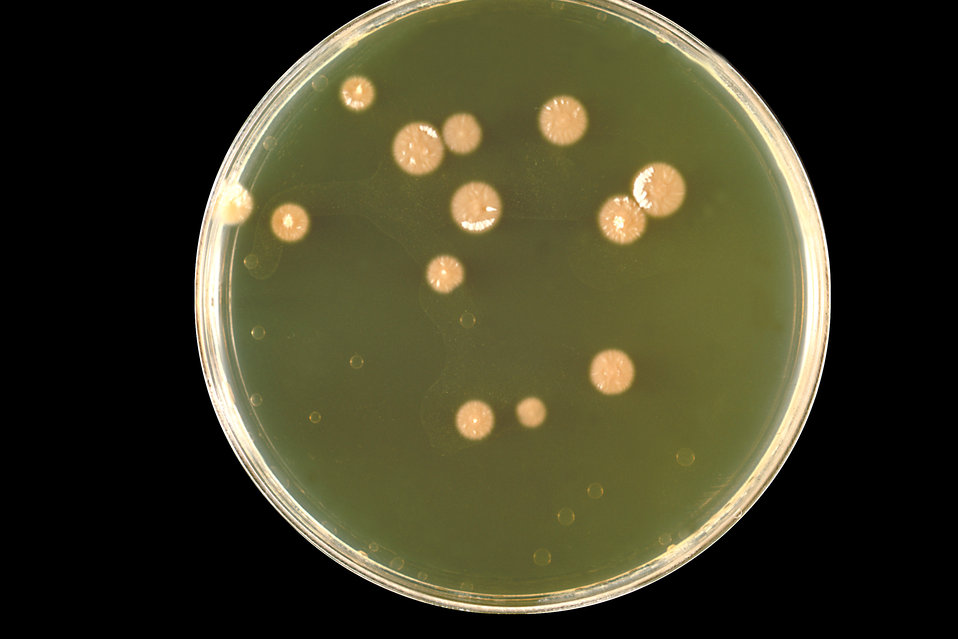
Pictured is a SABHI agar plate culture of the fungus Histoplasma capsulatum grown at 20�C.